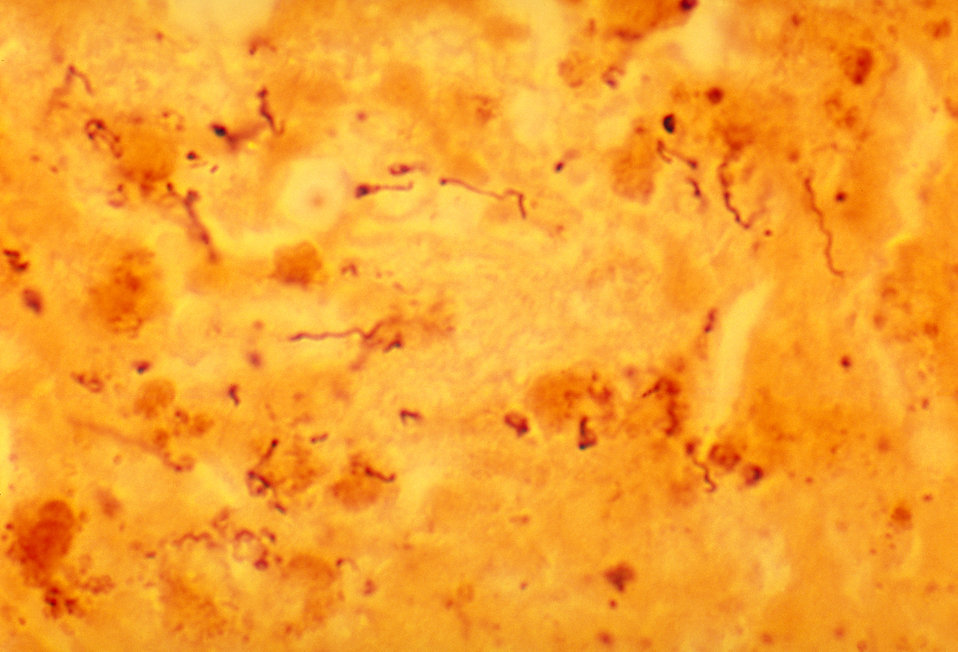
Histopathology showing Borrelia burgdorferi spirochetes in Lyme disease. Dieterle silver stain.